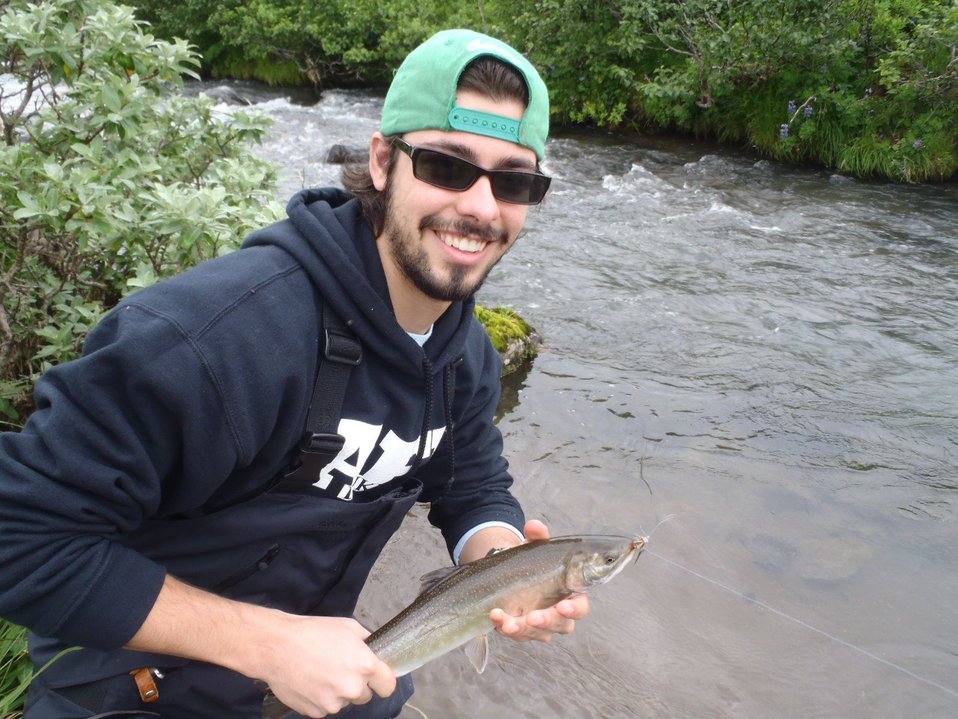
Corey A. Anco with Dolly Varden char, AK

2011 Wilderness Fellow Corey A. Anco with Dolly Varden char in AK